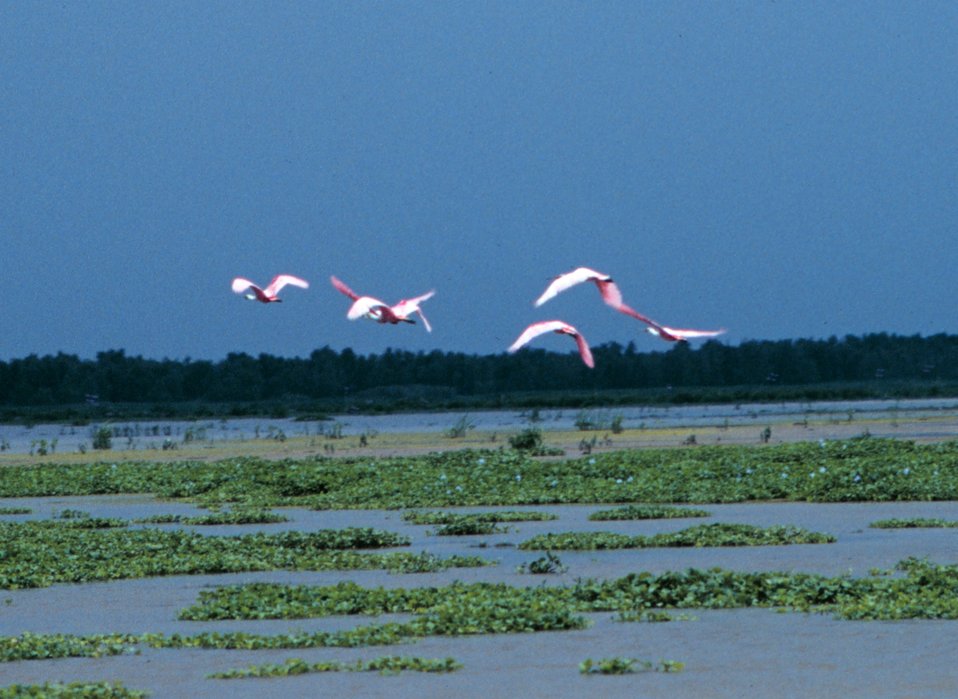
Flight of roseate spoonbills flying above the Everglades.